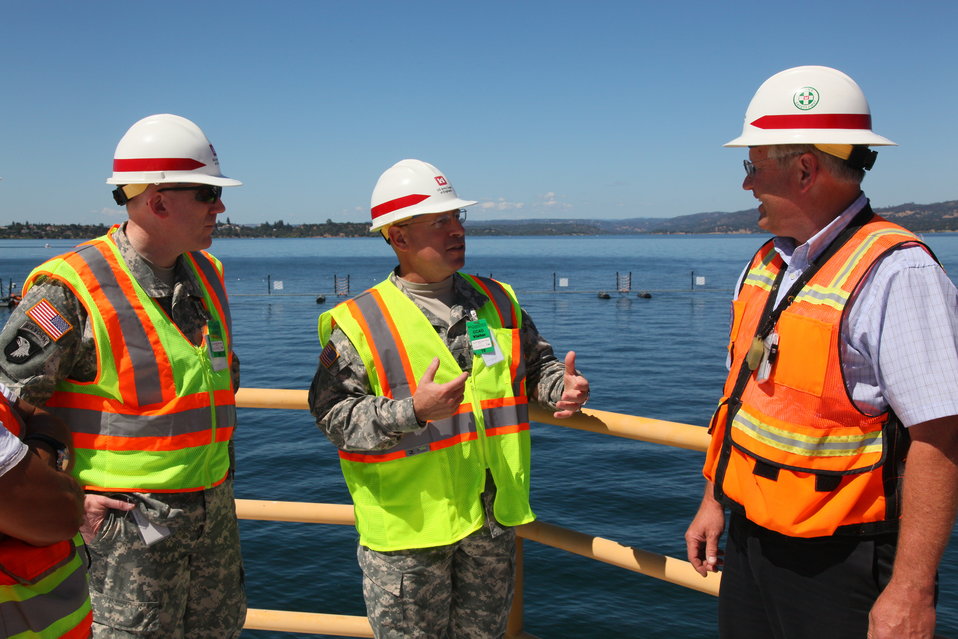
CSM Buxbaum at Folsom dam

U.S. Army Corps of Engineers Sacramento District Deputy Commander Lt. Col. Andy Kiger (left) and civil engineer Jon Revolinsky (right) speak with Command Sgt.Maj. Micheal Buxbaum, the Corps of Engineers Command Sergeant Major, during a visit to Folsom Dam in Folsom, Calif., July 19, 2011. Buxbaum toured the dam and the Folsom Joint Federal Project construction site during his visit.